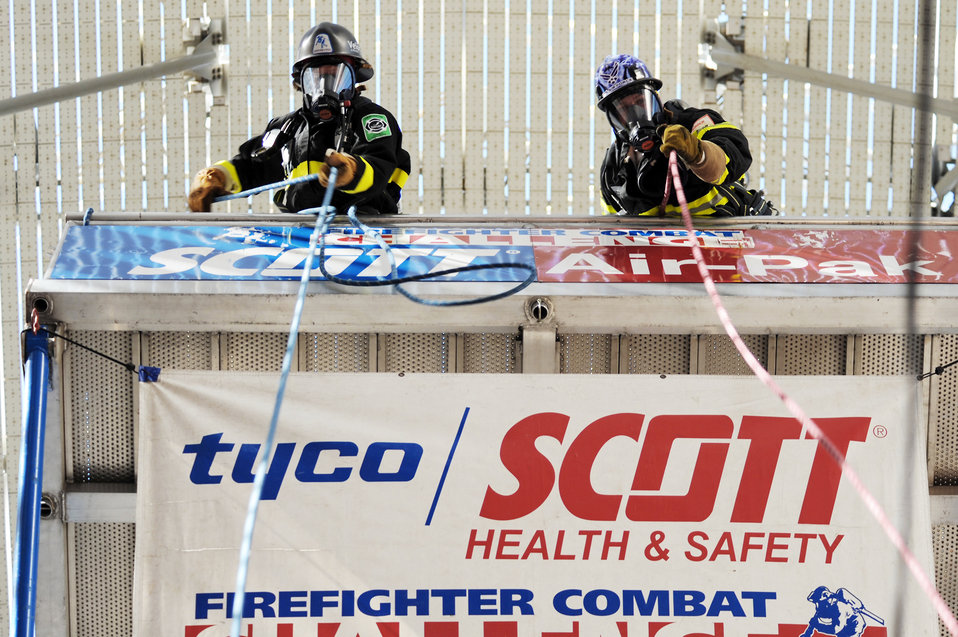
Airmen compete in 2009 Scott Firefighter Combat Challenge

Firefighters from all around the world compete in an individual firefighter event Nov. 17, 2009, at the 2009 Scott Firefighter Combat Challenge in Las Vegas.